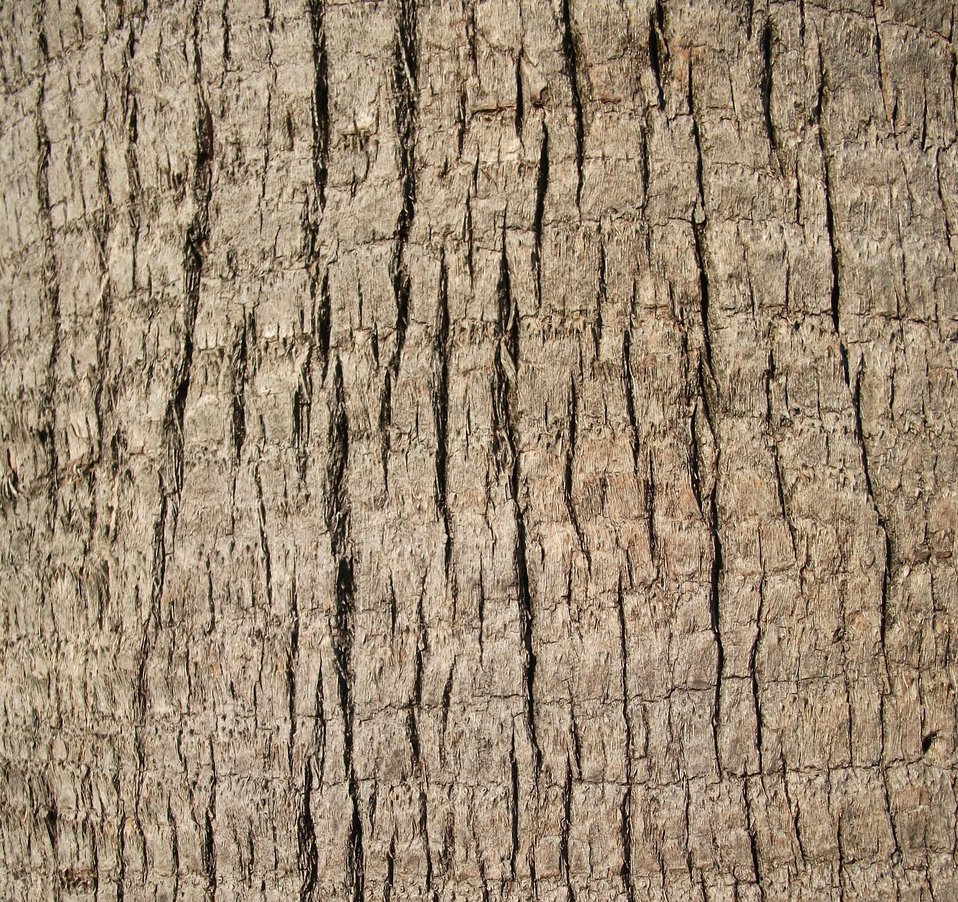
English:
Image title: A close up shot of a palm tree trunk texture Image from Public domain images website, http://www.public-domain-image.com/full-image/textures-and-patterns-public-domain-images-pictures/tree-bark-cortex-public-domain-images-pictures/a-close-up-shot-of-a-palm-tree-trunk-texture.jpg.html